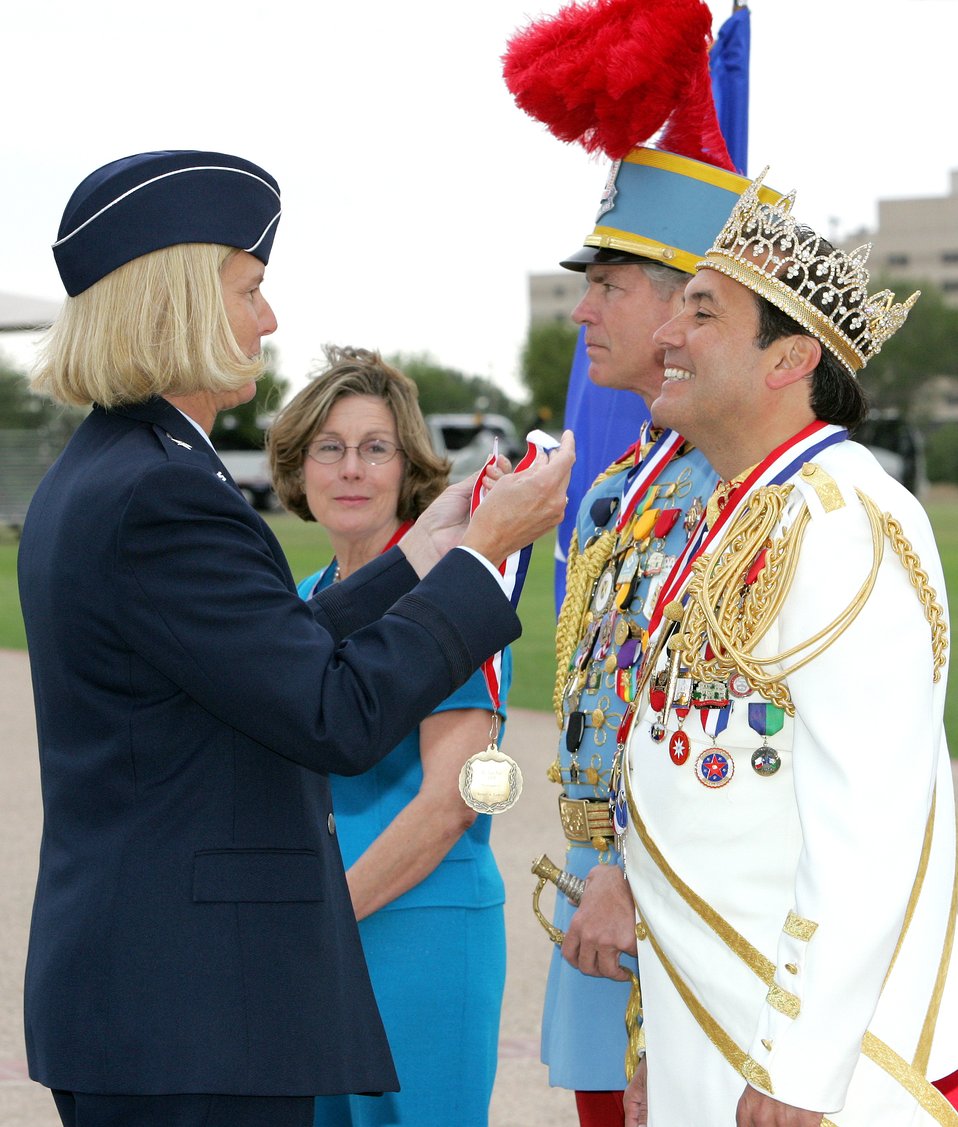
Viva Fiesta!

Brig. Gen. Mary Kay Hertog, 37th Training Wing commander at Lackland Air Force Base, Texas, presents El Rey Feo, Johnny Gabriel, with a Lackland medallion. Mr. Gabriel, along with Rick Shaw, King Antonio LXXXIV, and Mary West Traylor, Fiesta San Antonio Commission president, review a parade a Lackland on Wednesday, April 26, 2006. The military parade was one of the many events held during Fiesta, a 10-day celebration to honor the memory of the heroes of the Alamo and the Battle of San Jacinto in 1836.